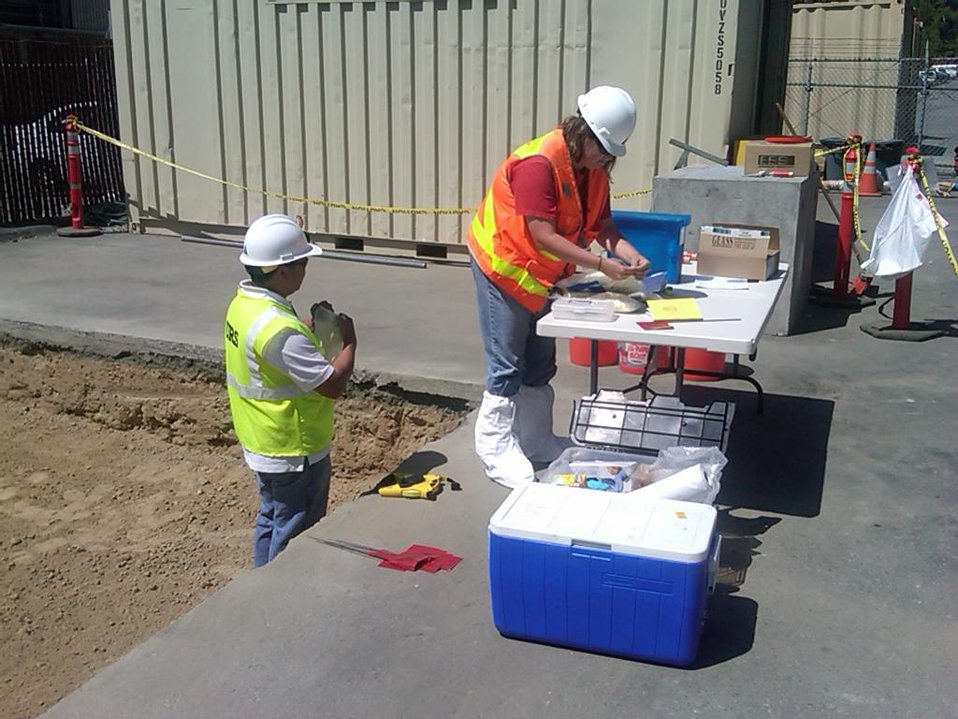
Recovery Act Supports Soil and Debris Cleanup, Groundwater Treatment at SLAC

Recovery Act workers are on track to remove more than 30,000 cubic yards of contaminated soil and debris at the SLAC National Accelerator Laboratory by September 2011.
The Recovery Act invested $14.3 million in legacy cleanup activities at SLAC. In addition to removing contaminated soil and debris that is shipped to local disposal facilities, Recovery Act workers installed three new groundwater treatment systems.